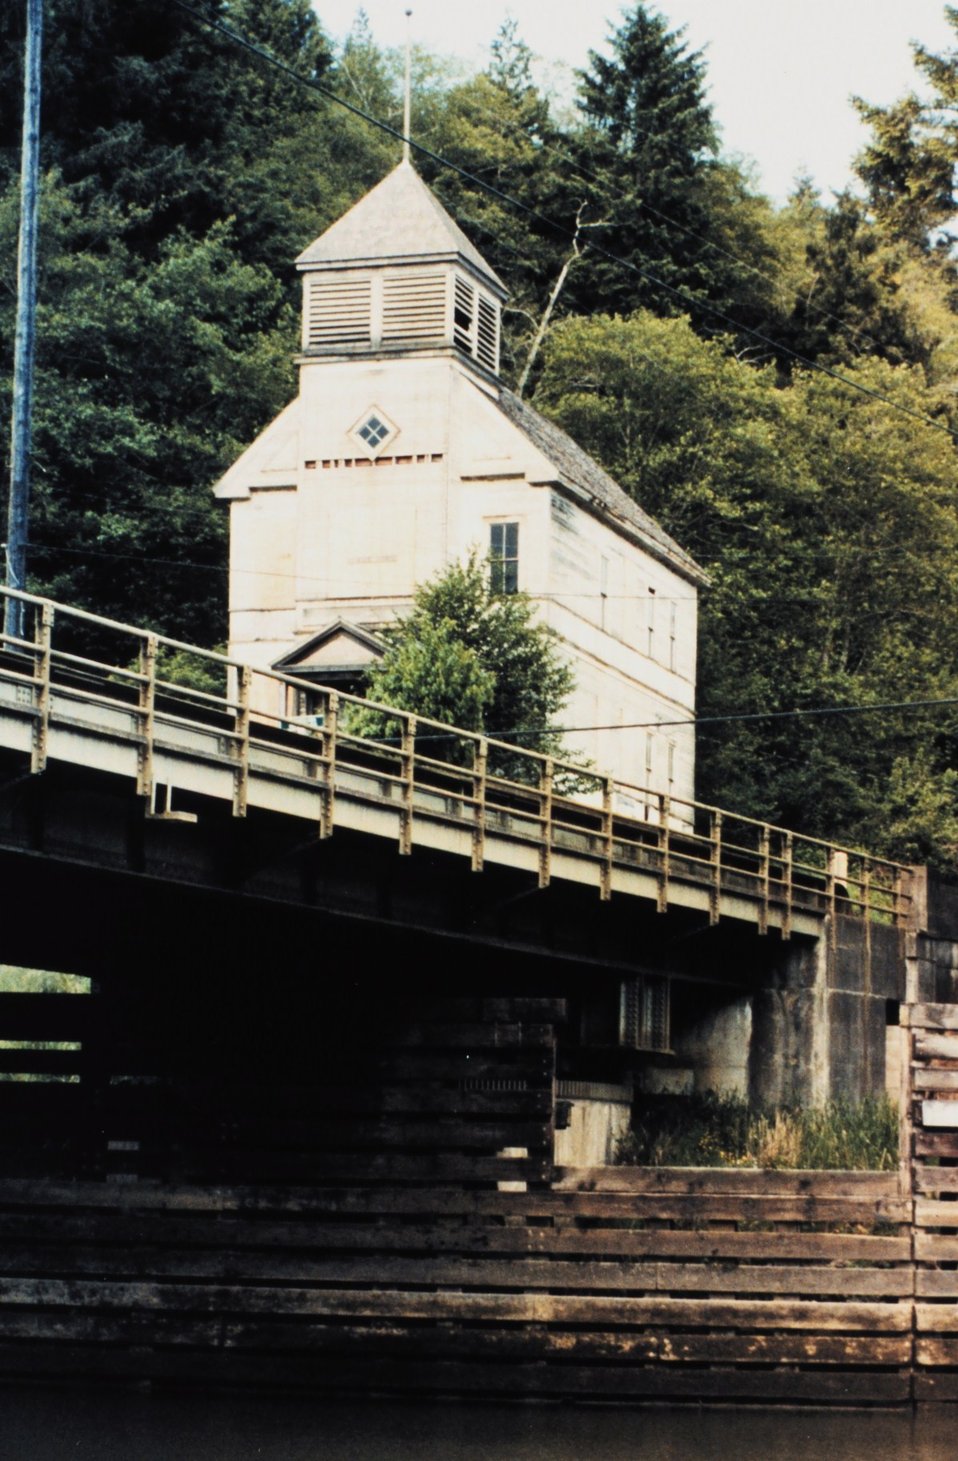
An old church at the bridge at Skamokawa - a ghost town on the Lower Columbia River.